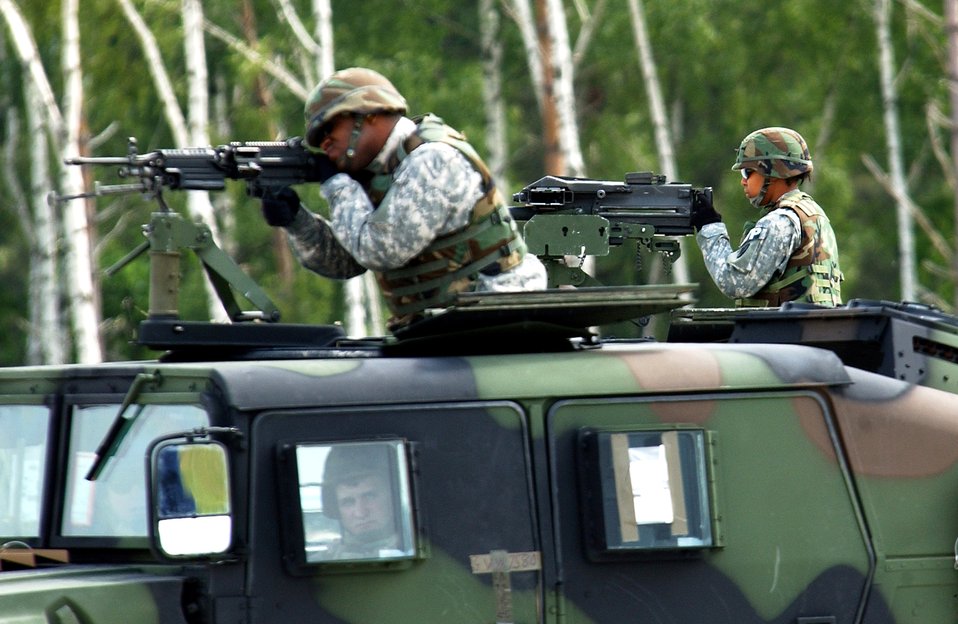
Operation Vigilant Star

Soldiers from the 230th Military Police Company secure the area around a C-17 Globemaster III after a simulated assault landing during Operation Vigilant Star at Ramstein Air Base, Germany, on Wednesday, May 24, 2006. The purpose of this operation was to showcase the capabilities of the C-17 to NATO countries.